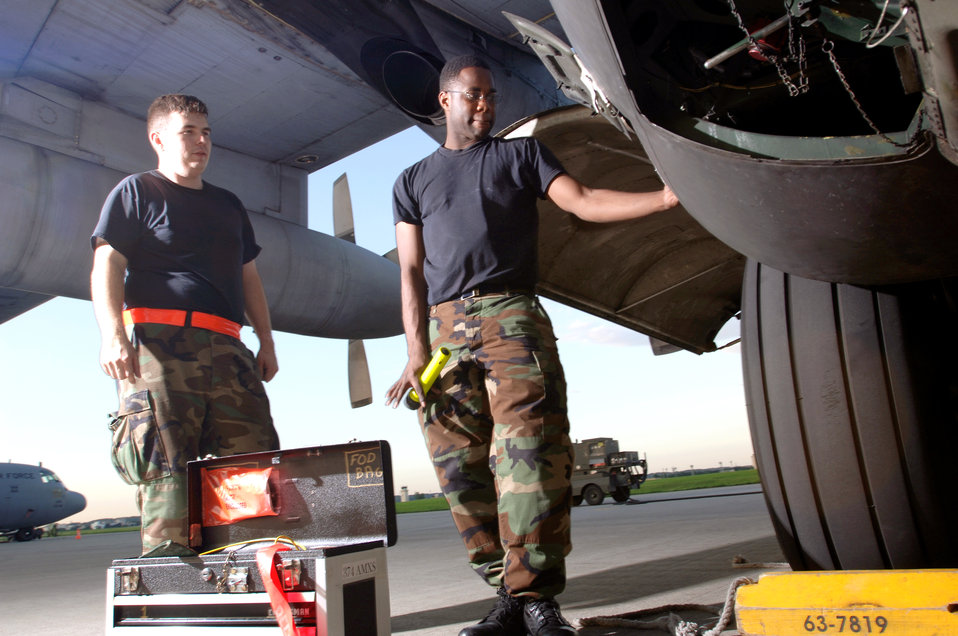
Checkin' things out

YOKOTA AIR BASE, Japan -- Senior Airman Shawn Root (left) and Staff Sgt. Anthony Page perform routine inspection on a C-130 Hercules here. Airmen with the 374th Maintenance Squadron here inspect, service and repair assigned and in-transit C-130 aircraft. Sergeant Page is a communications navigation technician with the squadron.